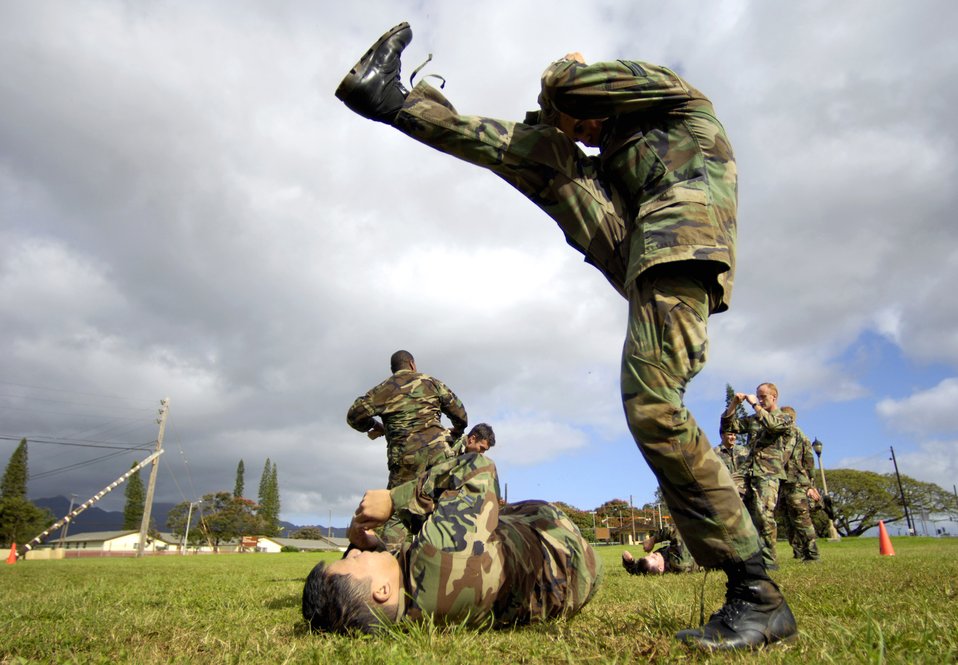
Close-combat skills

Senior Airman Glenn Wilderman practices close-combat skills with Airman 1st Class Clayton Yeung on Thursday, April 13, 2006, at Wheeler Army Air Field, Hawaii. Airmen Wilderman and Yeung are tactical air controllers from the 25th Air Support Operation Squadron.